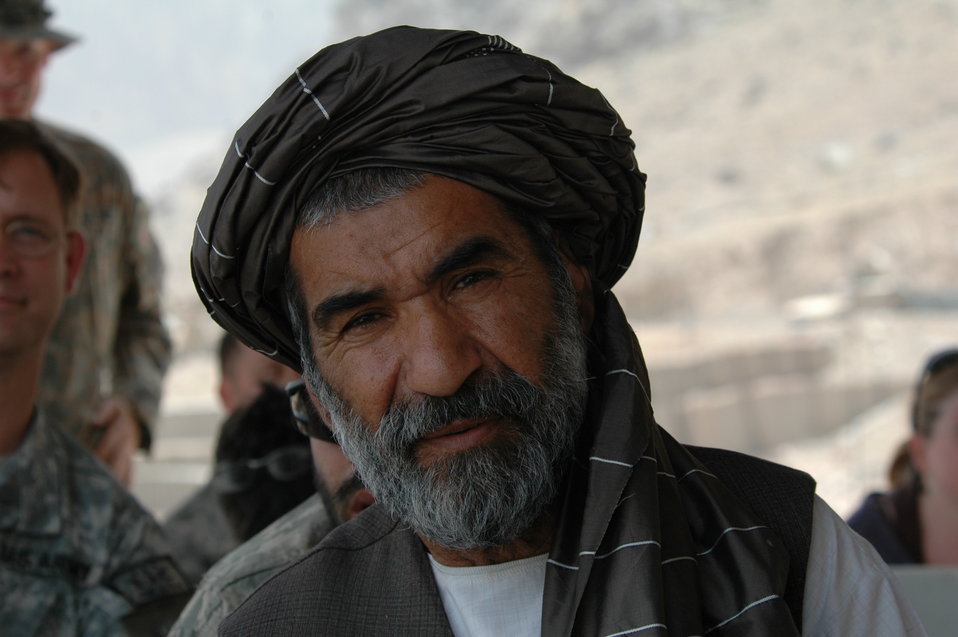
CODEL Berman